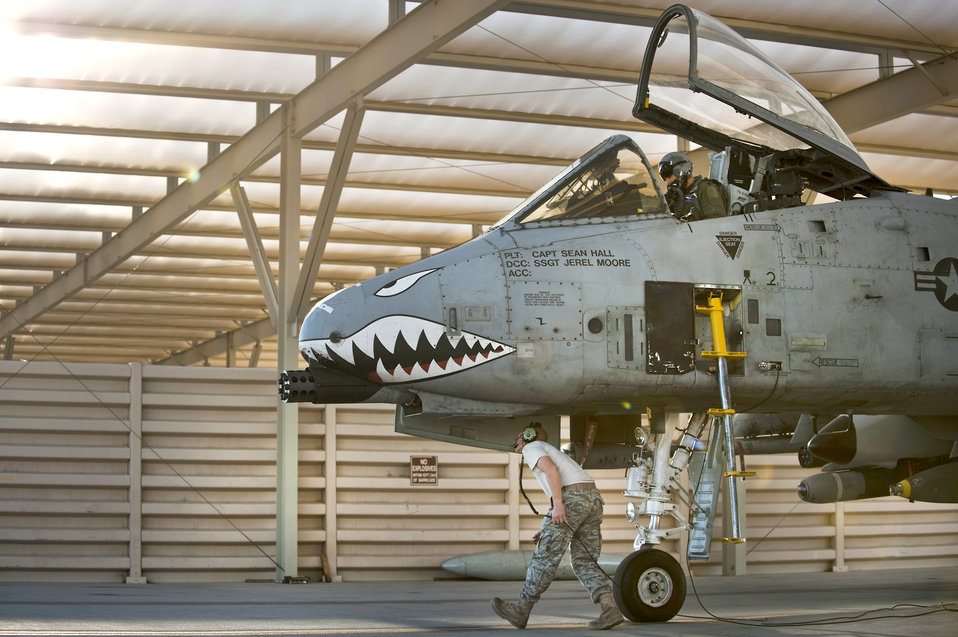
Green Flag West 11-2

Staff Sgt. Jamie Case and Capt. John Meyers conduct pre-flight checks on an A-10 Thunderbolt II before a training mission during the Green Flag West 11-2 exercise Dec. 6, 2010, at Nellis Air Force Base, Nev. The exercise provides a realistic air-land integration training environment for forces preparing to support worldwide combat operations. Sergeant Case is from the 23rd Aircraft Maintenance Squadron and Captain Meyers is assigned to the 74th Fighter Squadron, both at Moody AFB, Ga.